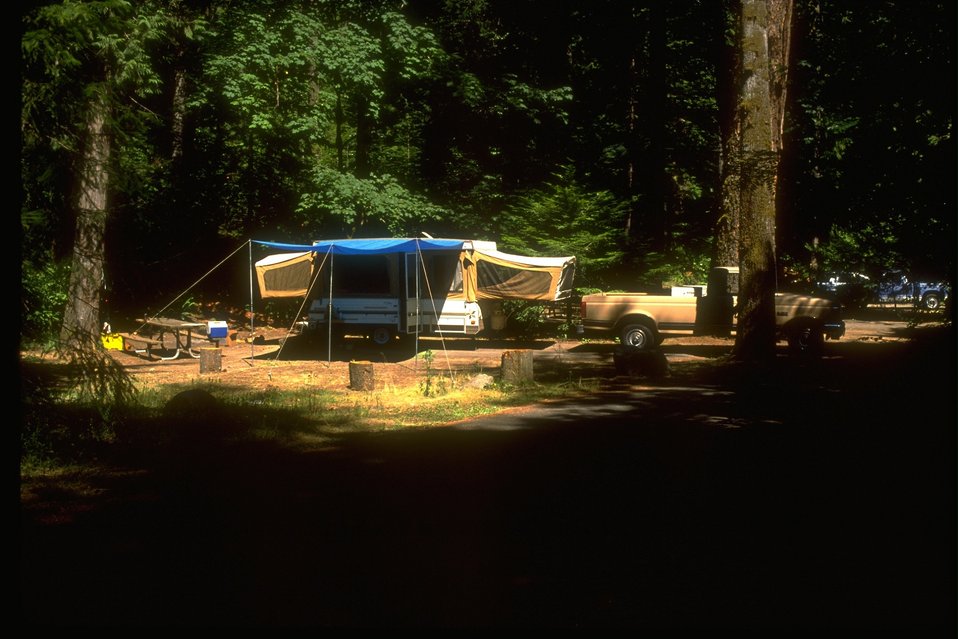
Camping at Susan Creek Campground.